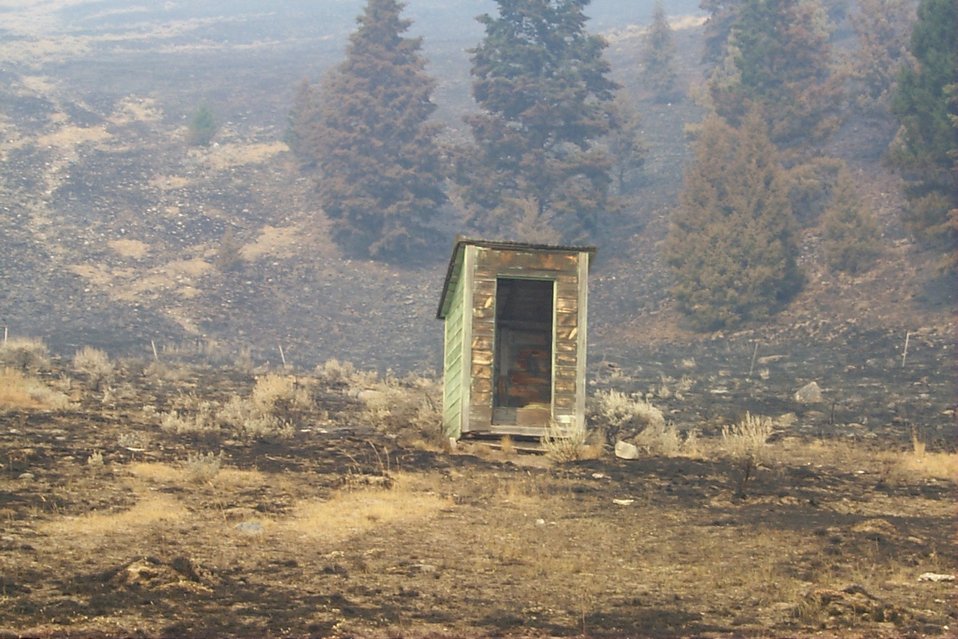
Urban interface Fire Clearwater Fire Salmon Field Office USRD Upper Snake River District